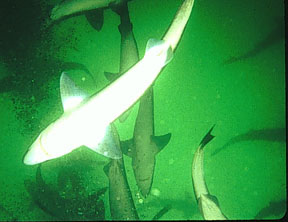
Sharks visit EPA dive site in Alaska

While EPA divers were inspecting a seafood outfall pipe, dozens of sharks were above them feeding on the outfall waste.

EPA divers visit these sites to verify whether the processors are operating as expected within their permit requirements and not harming the environment.